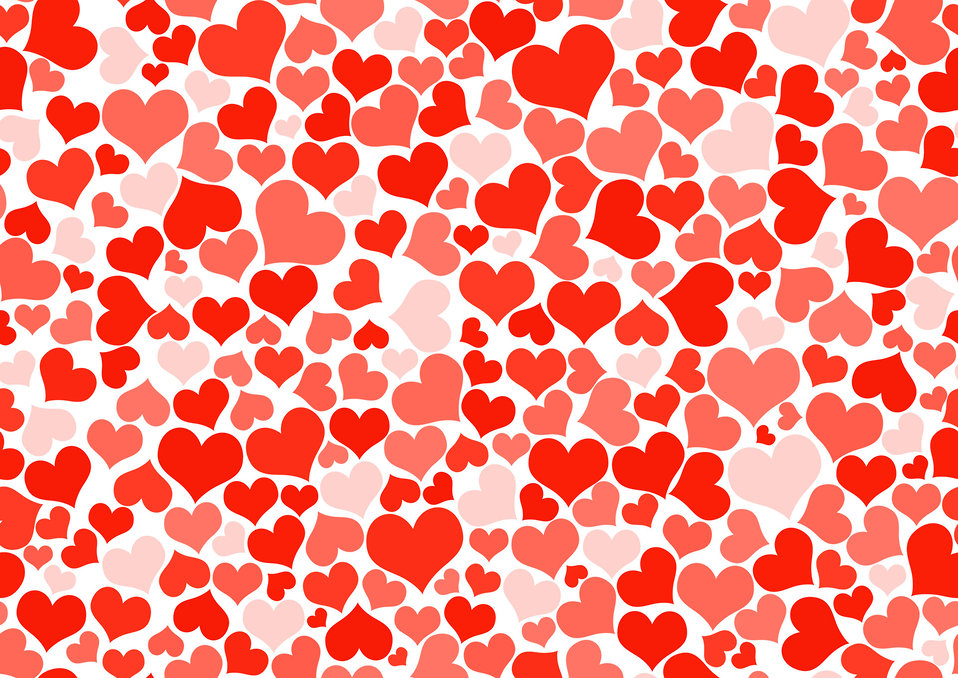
Red hearts wallpaper

Seamless red hearts wallpaper.